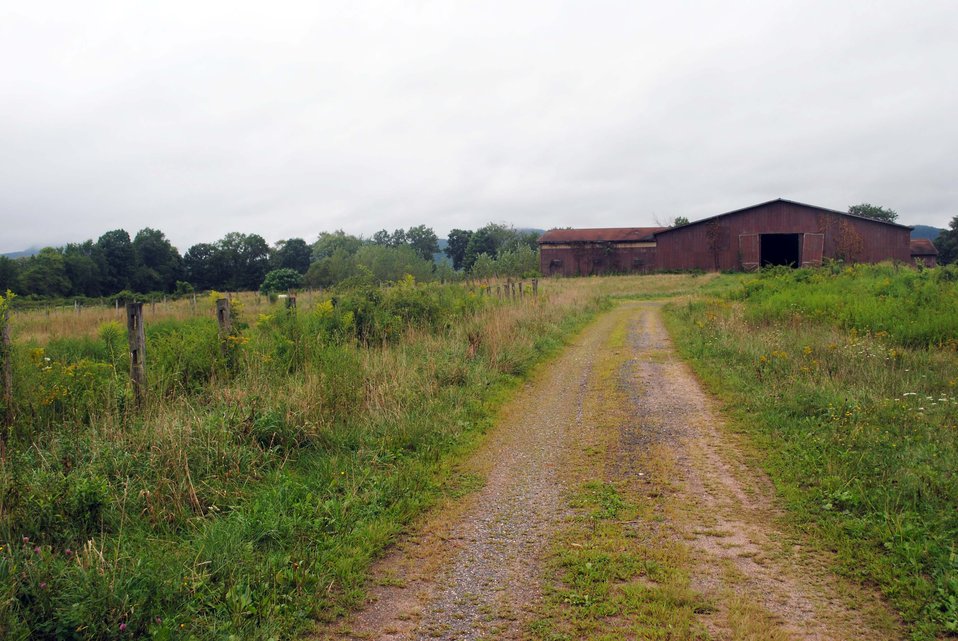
Fort River Division

An abandoned barn at the Fort River Division of the Silvio O. Conte National Wildlife Refuge, Hadley, MA.